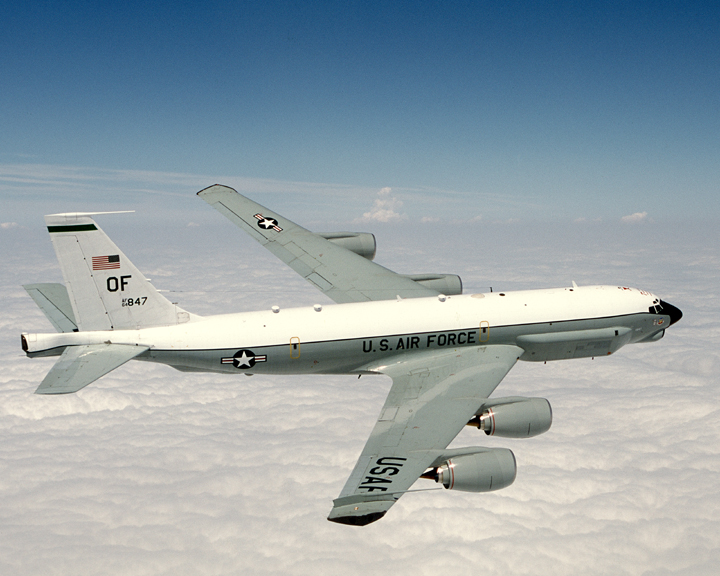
RC-135U Combat Sent

OVER GREENVILLE, Texas -- An RC-135U Combat Sent aircraft flies a training mission from Offutt Air Force Base, Neb. There are only two Combat Sent aircraft in the Air Force inventory and both are assigned to the 55th Wing at Offutt AFB.